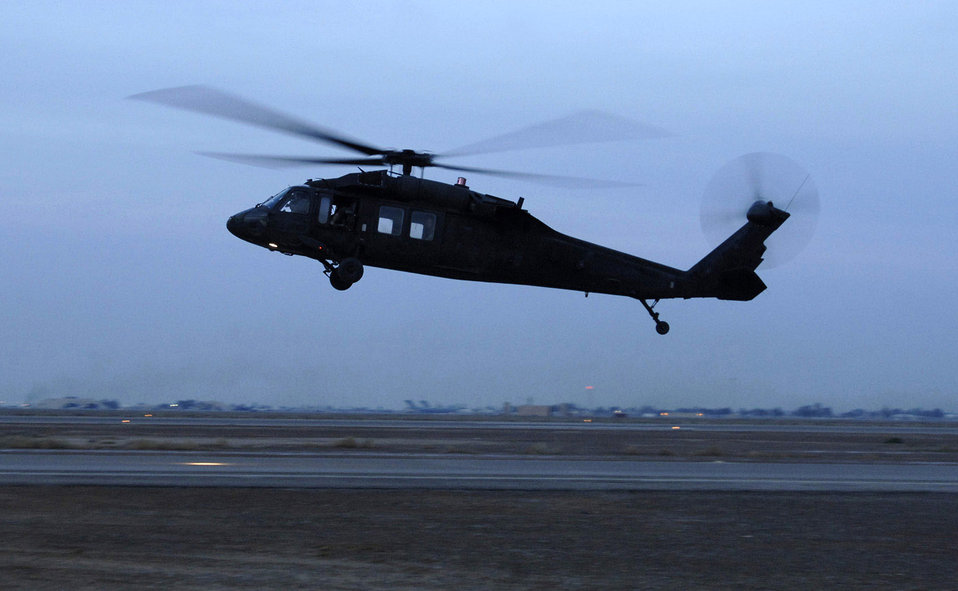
Pararescue Airmen mission ready for search, rescue

An HH-60G Pave Hawk aircrew take off for a combat search and rescue rehearsal mission Feb. 24 outside Balad Air Base, Iraq. They use these rehearsal missions to stay proficient.